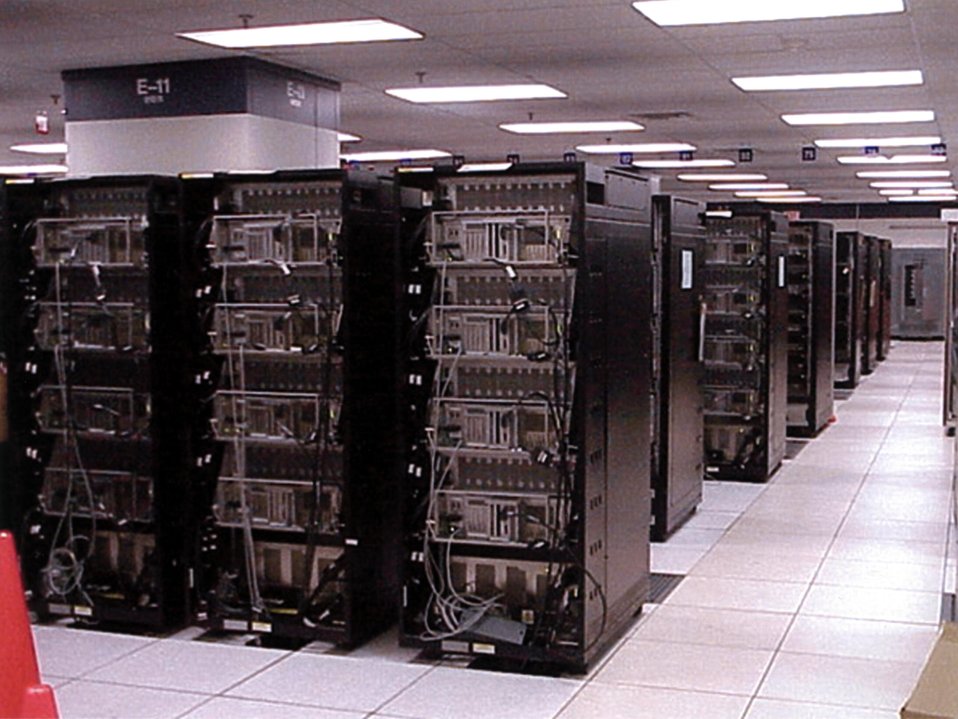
ASCI, ACCELERATED STRATEGIC COMPUTING INITIATIVE.

PICTURED ARE THE EARLY STAGES OF INTEGRATION OF THE ASCI WHITE SUPERCOMPUTER SYSTEM AT THE LAWRENCE LIVERMORE NATIONAL LABORATORY, UNVEILED IN AUGUST, 2001. ASCI WHITE IS COMPOSED OF 8,192 COMMERCIAL IBM PROCESSORS, HAVING 6.2 TERABYTES OF MEMORY AND 160 TERABYTES OF STORAGE SPACE IN ABOUT 7,000 DISK DRIVES.